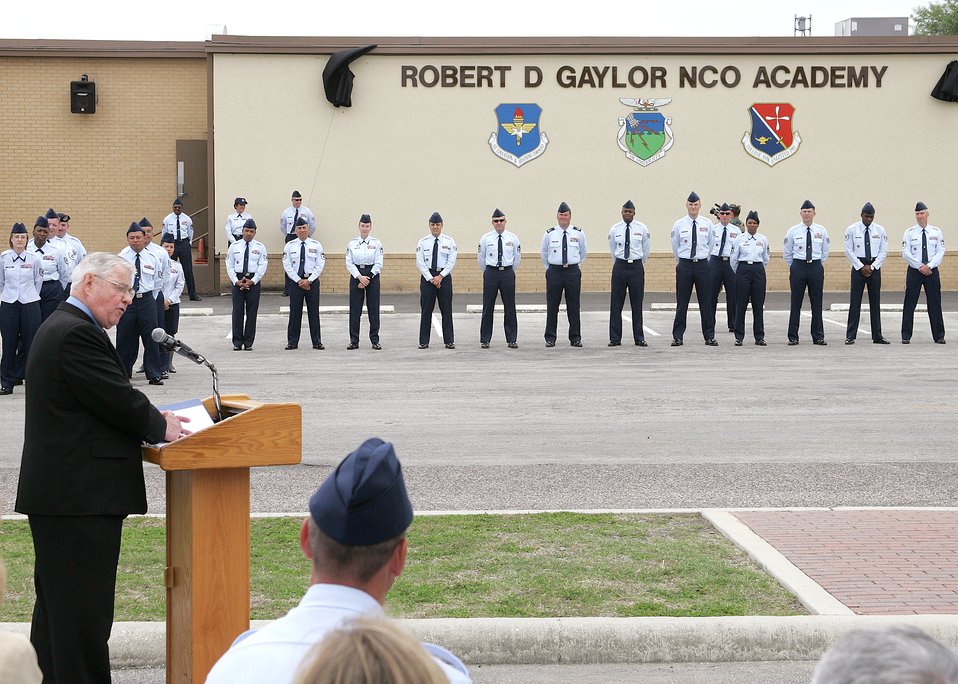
Lackland NCO academy renamed to honor CMSAF Gaylor

The fifth Chief Master Sergeant of the Air Force, Robert D. Gaylor, addresses a crowd at Lackland Air Force Base, Texas, on Thursday, March 30, 2006. The Lackland noncommissioned officer academy was renamed the Robert D. Gaylor NCO Academy. The academy has a 33-year history. It graduates more than 1,600 students a year, making it the largest NCO academy in the Air Force.